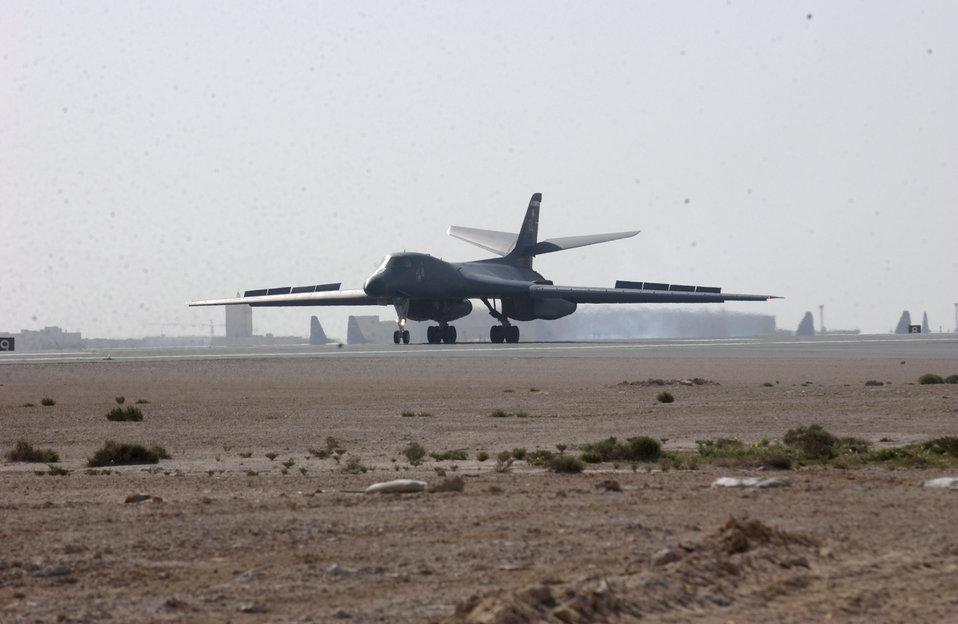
May 2 airpower summary: B-1B provides close-air support

An Air Force B-1B Lancer returns to Southwest Asia after completing a close-air support mission in Iraq. Forward wing settings are used for takeoff, landings, air refueling and in some high-altitude weapons employments. Aft wing sweep settings -- the main combat configuration -- are typically used during high subsonic and supersonic flights, enhancing the B-1B's maneuverability.